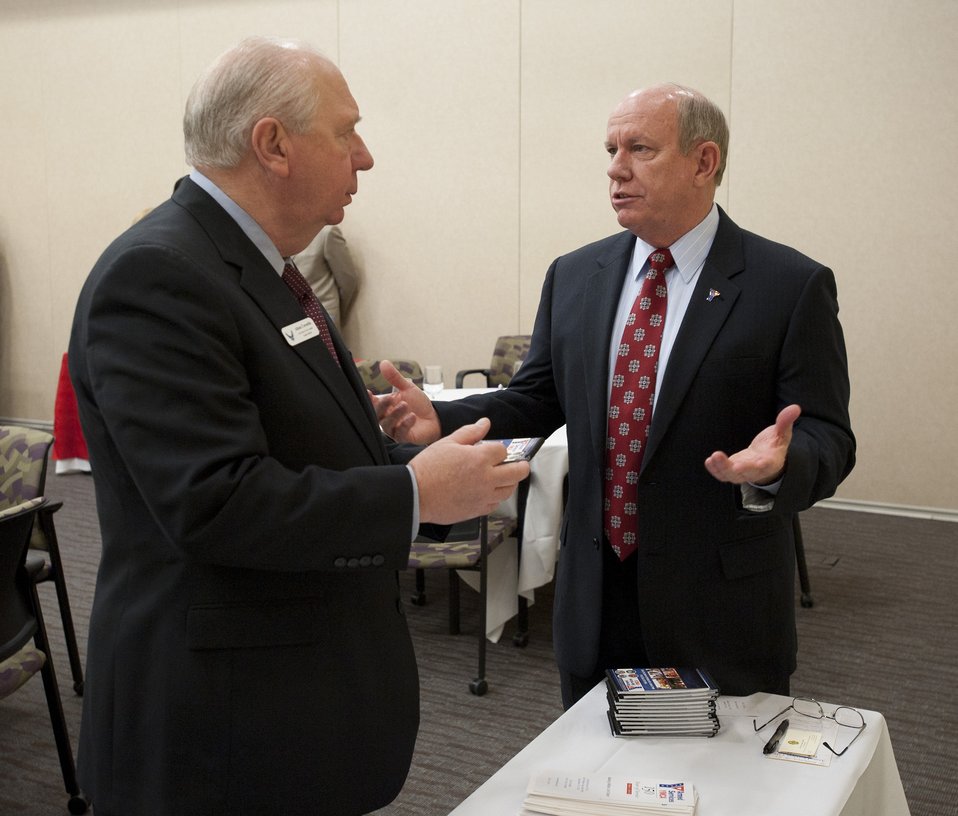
Civic leader conference

Al Cornella (left), from South Dakota, speaks with retired Brig. Gen. Thomas
Landermeyer, of the Armed Services YMCA, during an Air Force civic leader
conference at Joint Base Andrews, Md., Jan. 31, 2012.